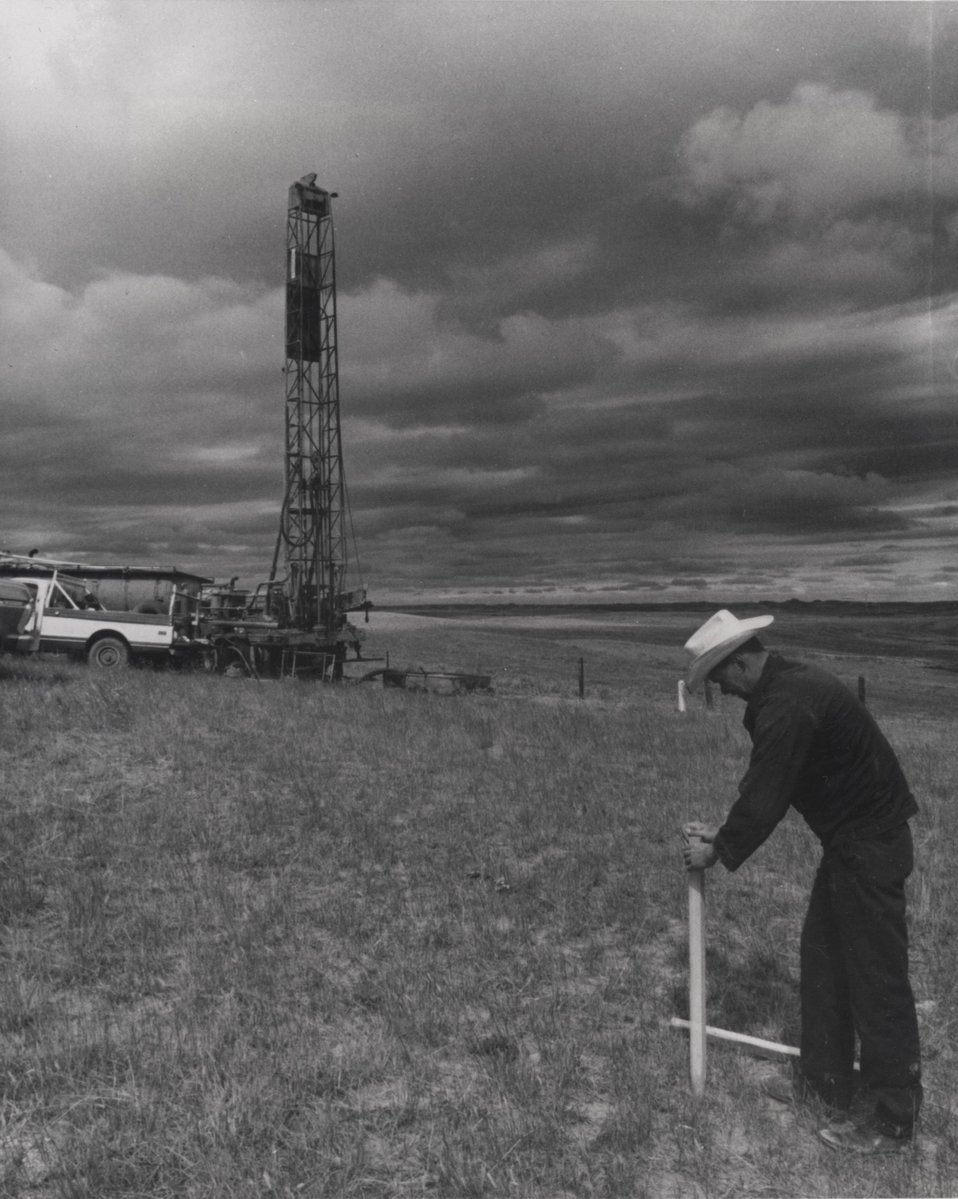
Land marker boundary staking and core drilling were the first steps in mine construction work at Kerr-Mc Gee's Jacobs Ranch near Gillette, Wyoming where the company hopes to start mining coal. c. 1976